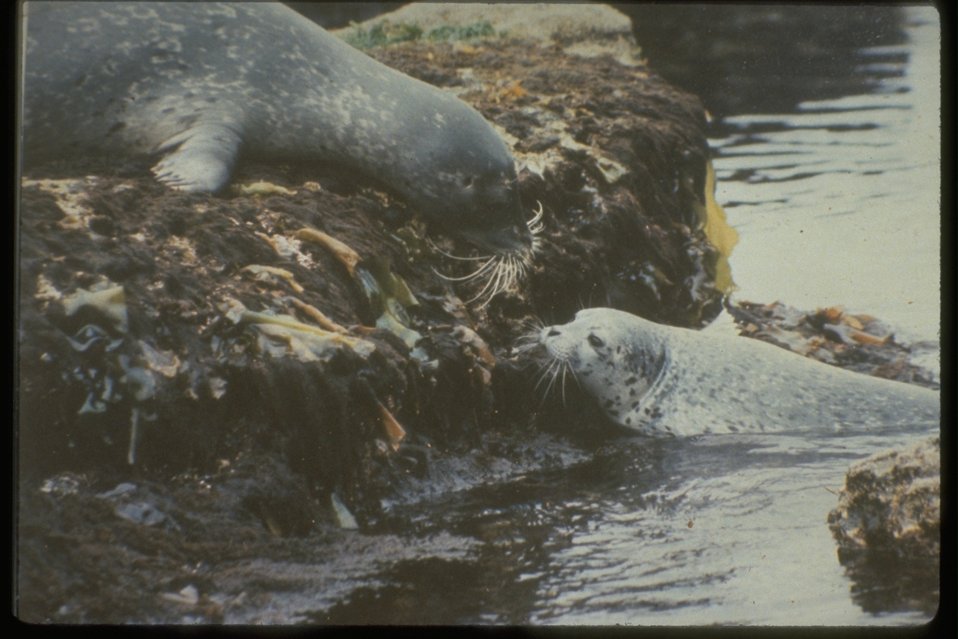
Harbor Seal with pup.